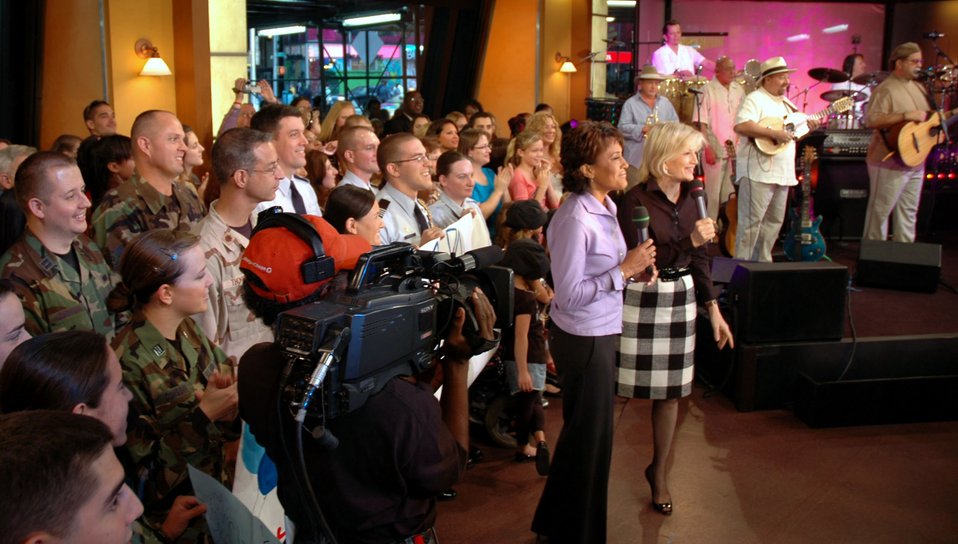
New York City salutes Air Force's birthday